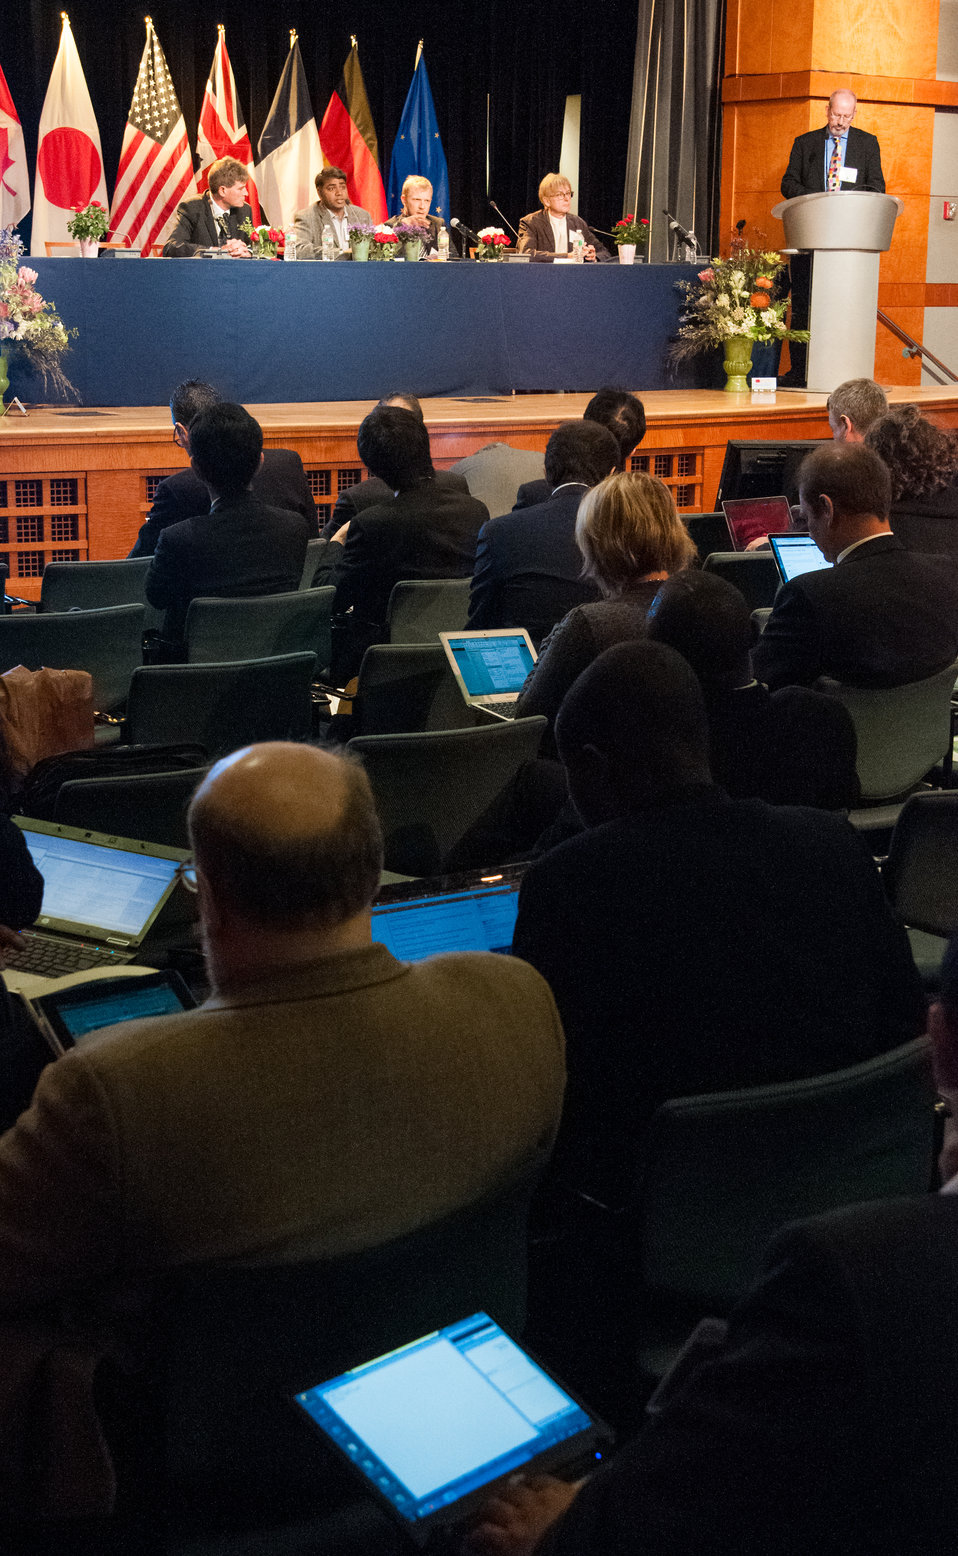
Attendants at the G-8 International Conference on Open Data for Agriculture in Washington, D.C. held on Tuesday, Apr. 30, 2013 were able to Tweet and view live Twitter feeds via a monitor in the auditorium. The panel pictured here: “What Does Open Data Look Like?” was moderated by United Kingdom Global Food Security Programmer Tim Benton and paneled by United Nations, Italy FAO Johannes Keizer, Wageningen, Netherlands representative Dr. Sander Janssen, ICRISAT, India Dr. Rajeev Varshney. The conference launched a new 'virtual community' as part of a suite of actions, including the release of new data that the U.S. is taking to give farmers and ranchers, scientists, policy makers and other members of the public easy access to publicly funded data to help increase food security and nutrition.